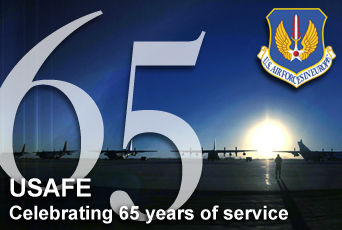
USAFE celebrates 65 years of airpower

U.S. Air Forces in Europe officials celebrate 65 years of service Jan. 19. Since 1942, command Airmen have maintained a presence in the European theater with the oldest, continuously active Air Force major command.